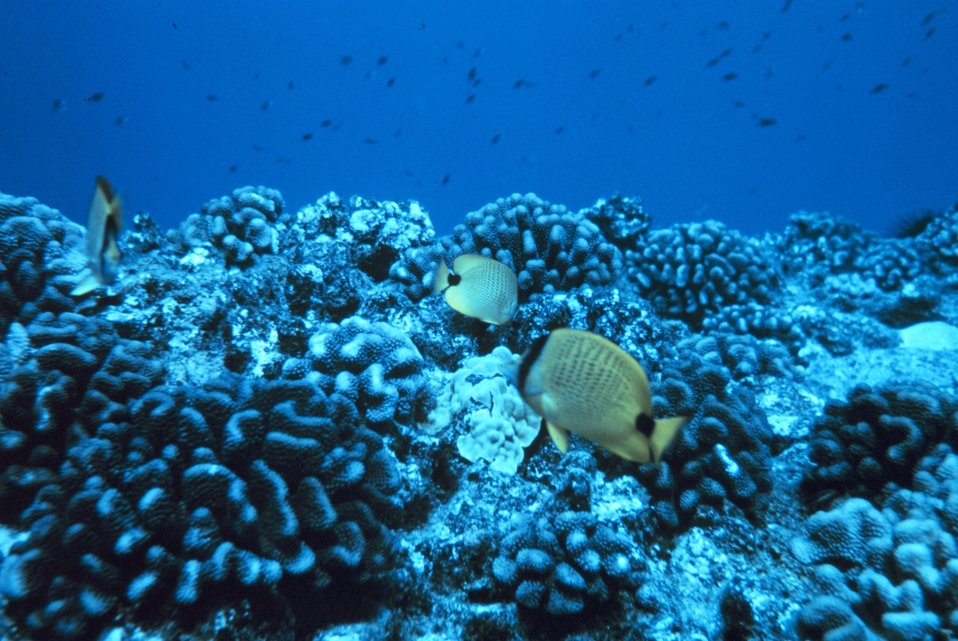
Chaetodon miliaris - butterfly fish over healthy Porites lobata coral reef.